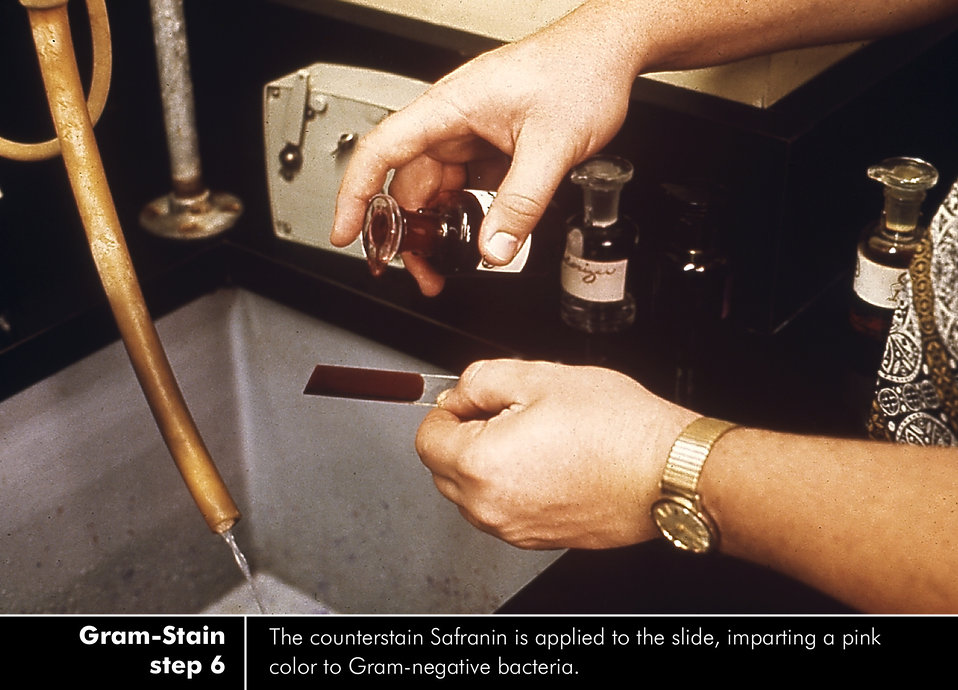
Gram-stain procedure - Step 6 of 7. See PHIL ID#'s: 3433, 3426, 3427, 3435, 3437, 3436, 3434 for the complete set.